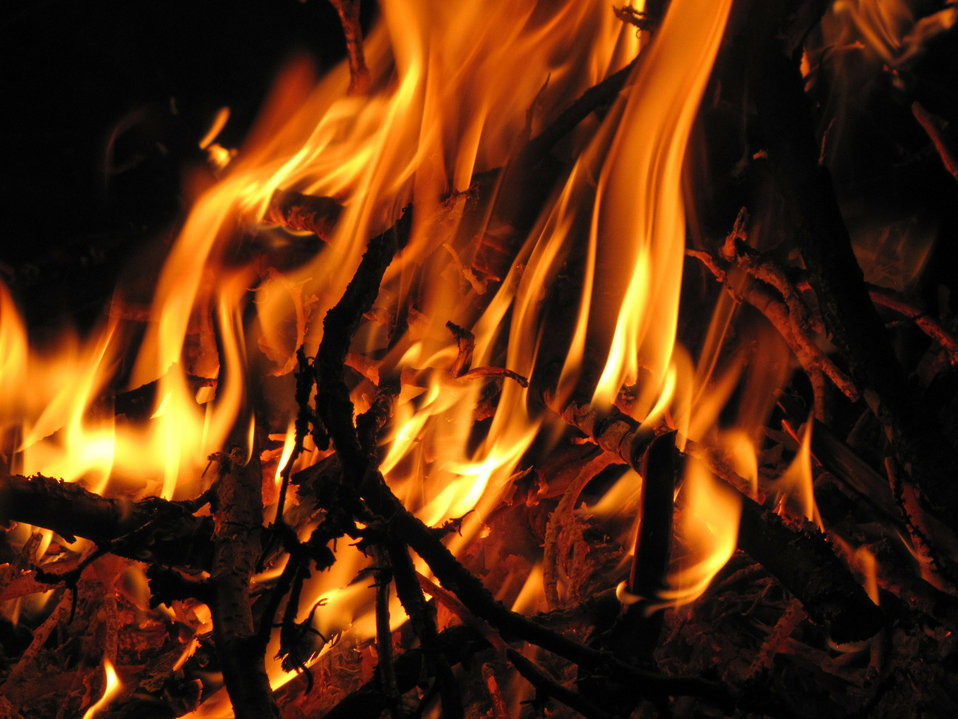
Fire at night.